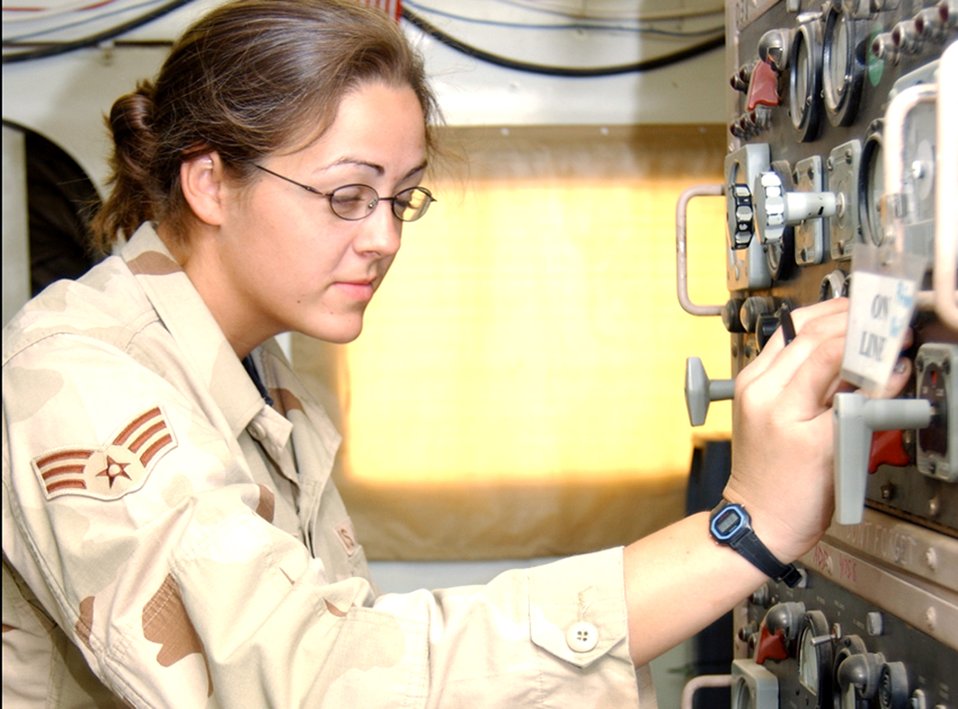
Power pros critical to mission

Senior Airman Lorraine Hunter checks electrical systems used by housing areas at Balad Air Base, Iraq. She is assigned to the 332nd Air Expeditionary Civil Engineer Squadron.